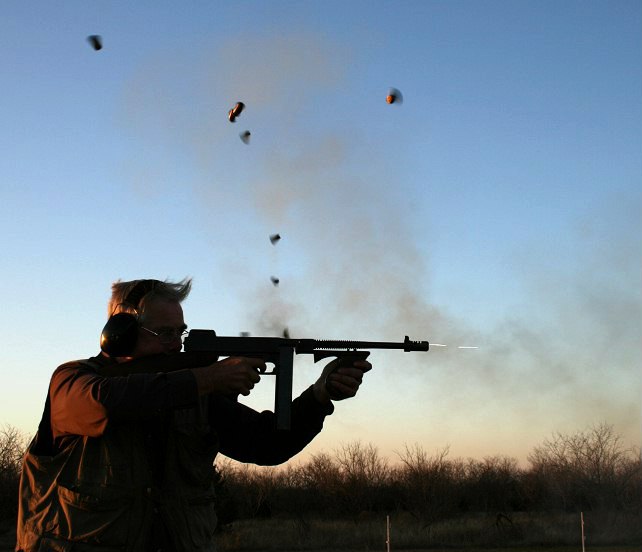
This is a 1928 Thompson owned by a retired United States Marshall. It is reasonably easy to control and keep on target at short to moderate ranges. Phillip Sharp could hit the standard Colt silhouette at 200 yards firing in the Semi Auto Mode. He suggested full auto fire should be reserved for crowd control or fleeing vehicles. Location: Central Texas